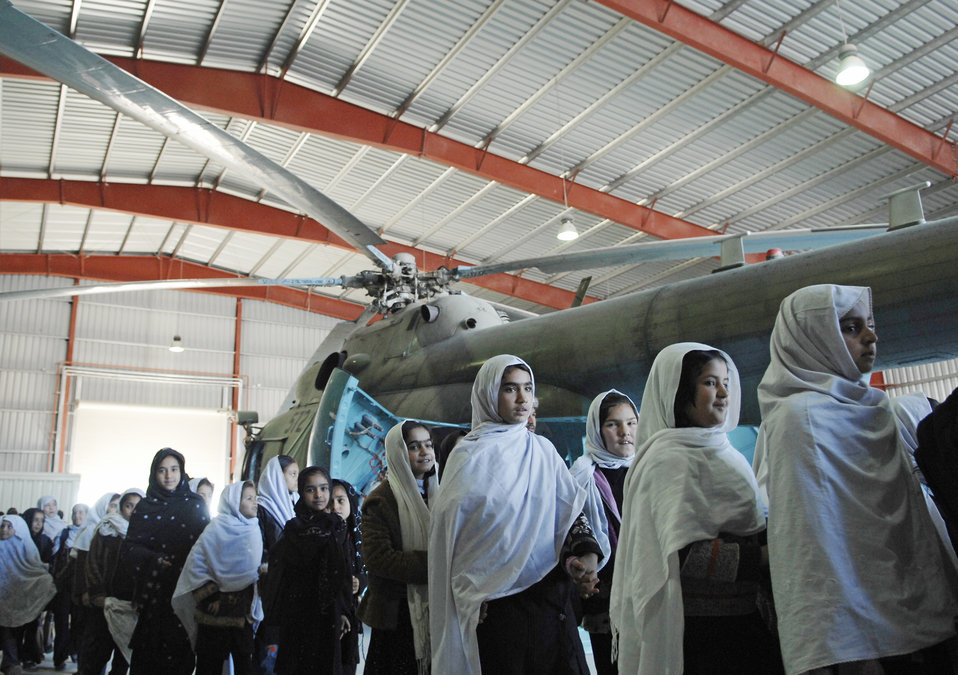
Afghan children visit Kandahar, see partnership between Afghans, coalition forces

Approximately 250 children from local schools in Kandahar City visited Kandahar Airfield, Afghanistan Dec. 31, 2009.